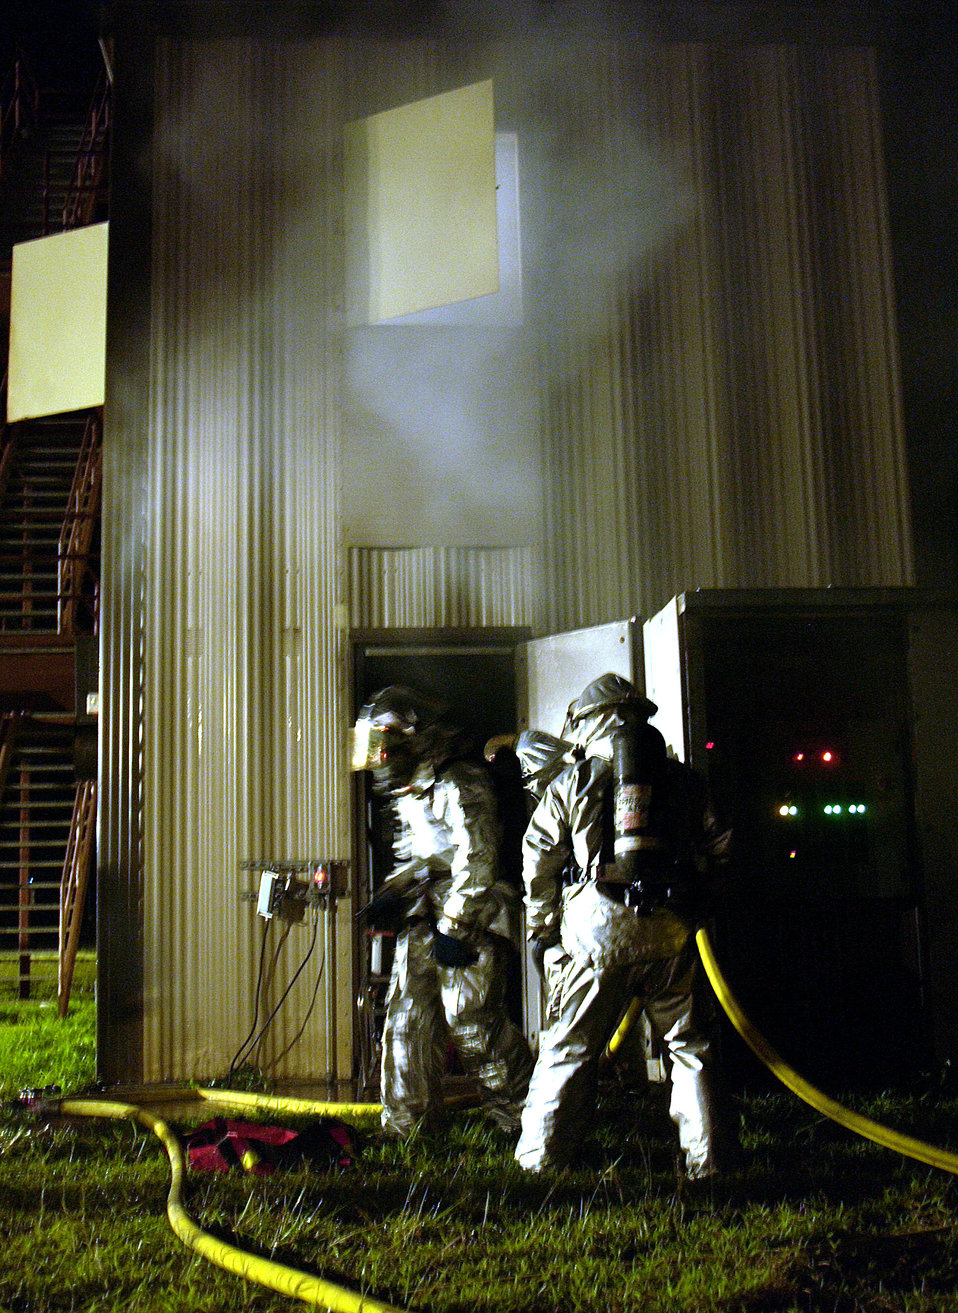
'Beverly' visits Guam

ANDERSEN AIR FORCE BASE, Guam -- Firefighters with the 36th Civil Engineer Squadron respond to a live fire on the fire training grounds here during Exercise Beverly Palm 05-07. The routine exercise is held several times a year to sharpen the mobility and wartime capabilities of participating servicemembers.